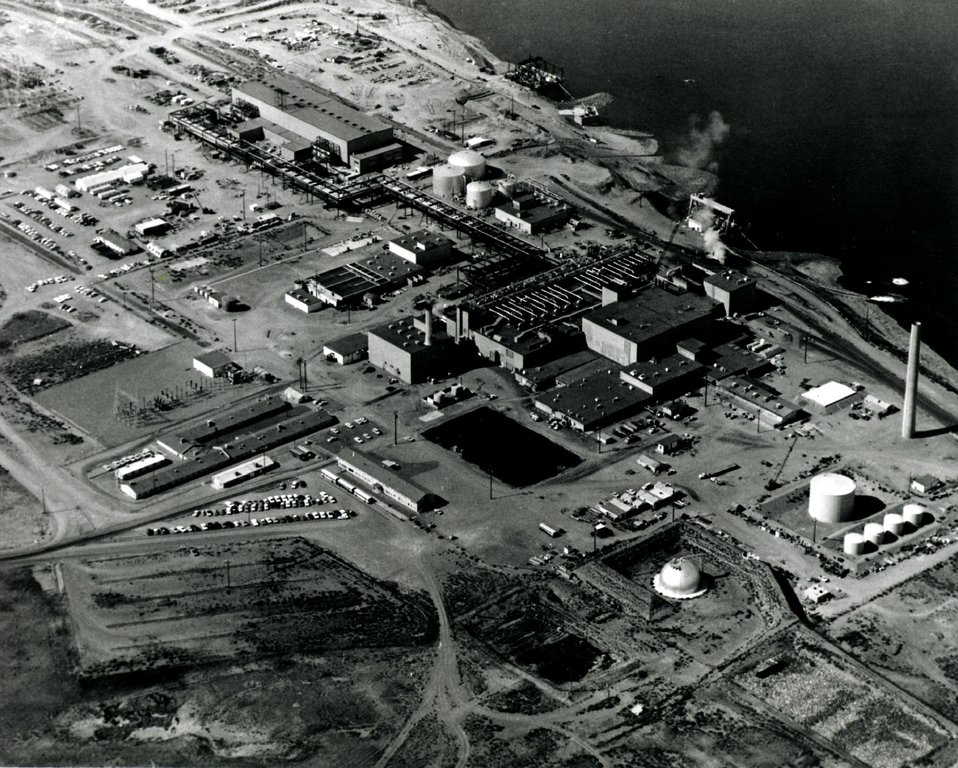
The dual-purpose reactor on the banks of the Columbia River at the Hanford plant near Richland, Washington, is now producing both electric power and plutonium. Circa 1967.